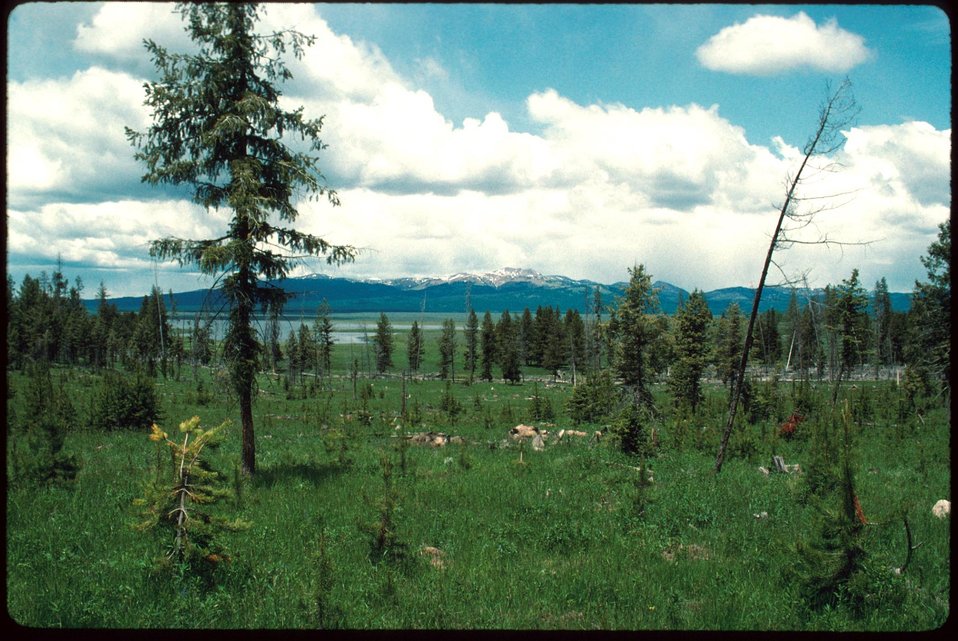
Green Canyon Medicine Lodge, Idaho Falls Island Park Reservoir Upper Snake River District